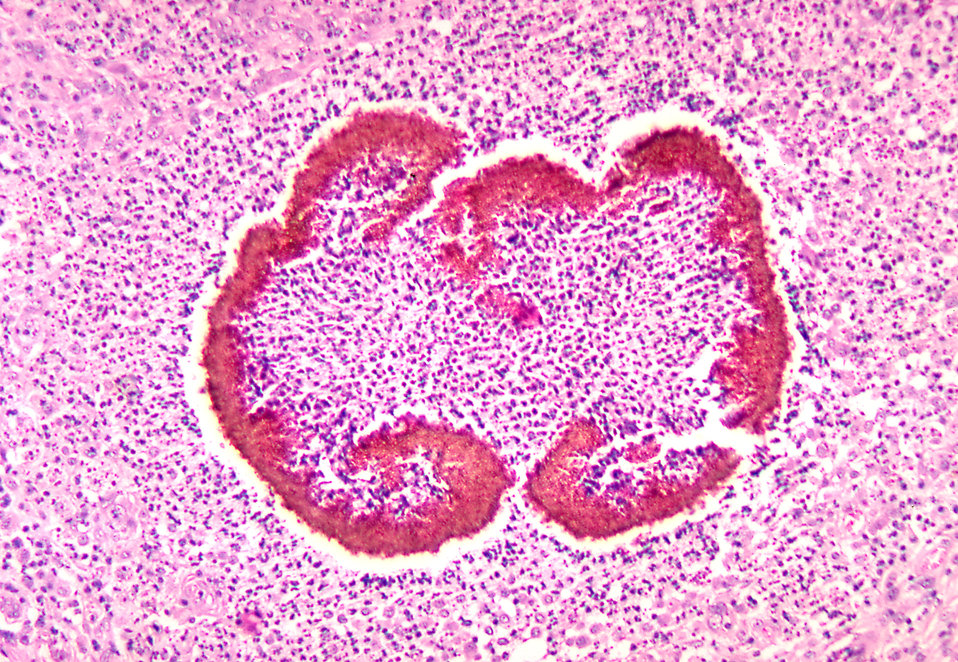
This micrograph depicts the histopathologic changes seen in 'black grain mycetoma' due to Exophiala salmonis.